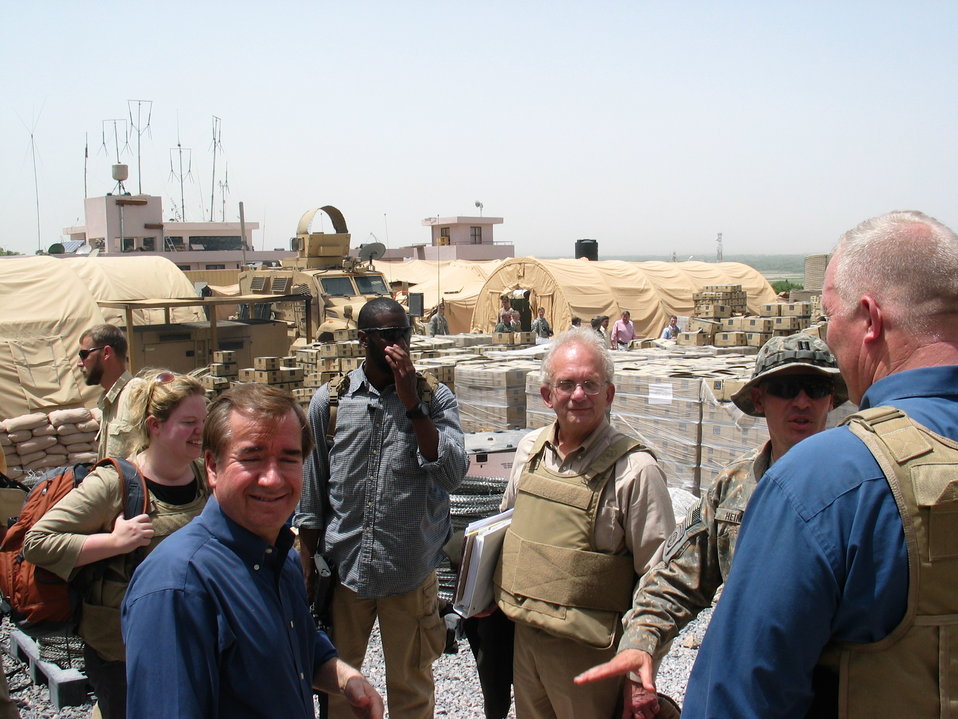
CODEL Berman